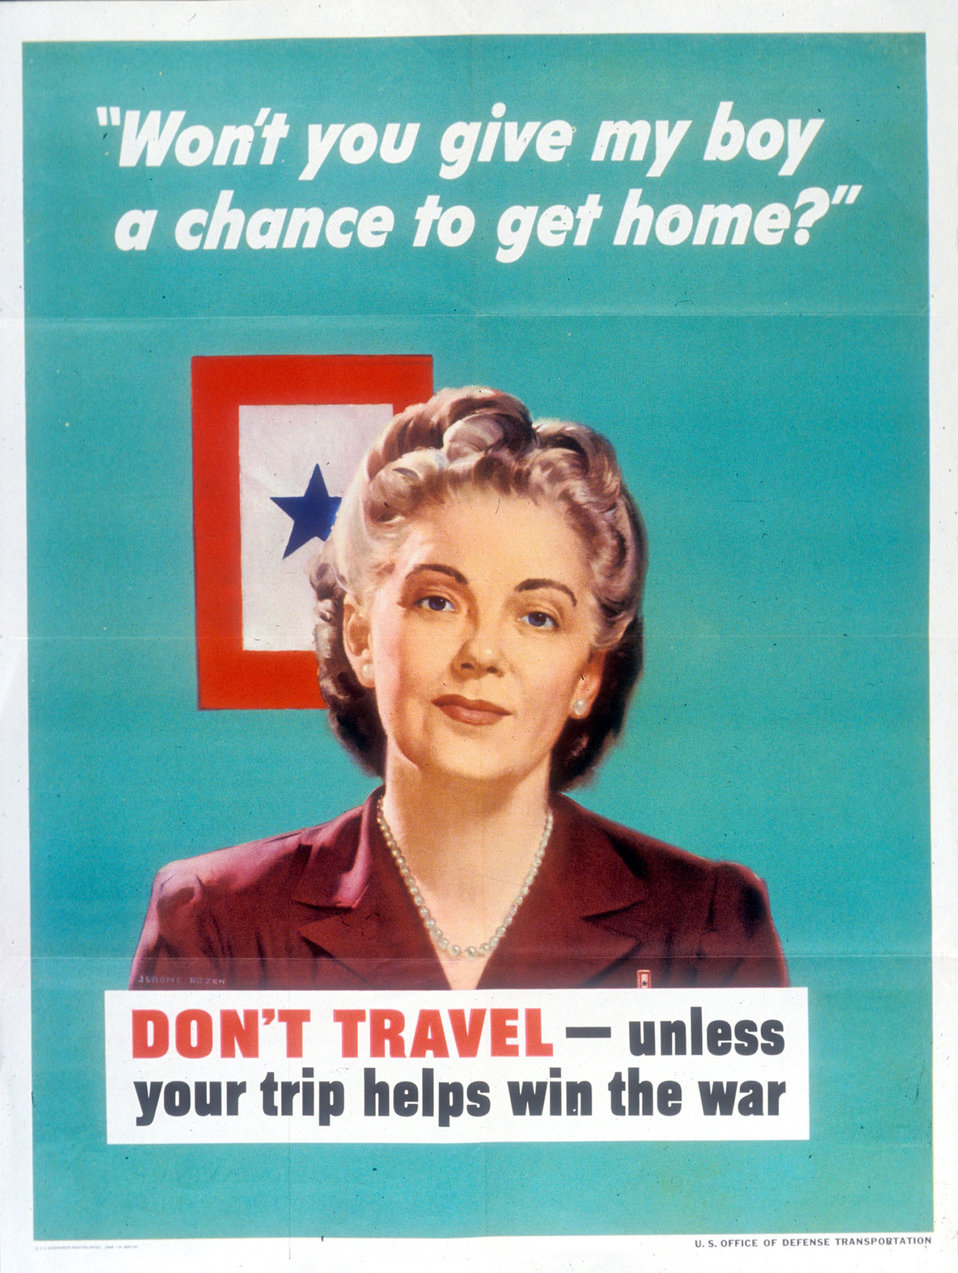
Families always have been essential to the Air Force

A service flag and mother are powerful symbols in this World War II poster on display at the National Museum of the U.S. Air Force in Dayton, Ohio. Gasoline and rubber for tires were urgently needed to win the war and give her boy